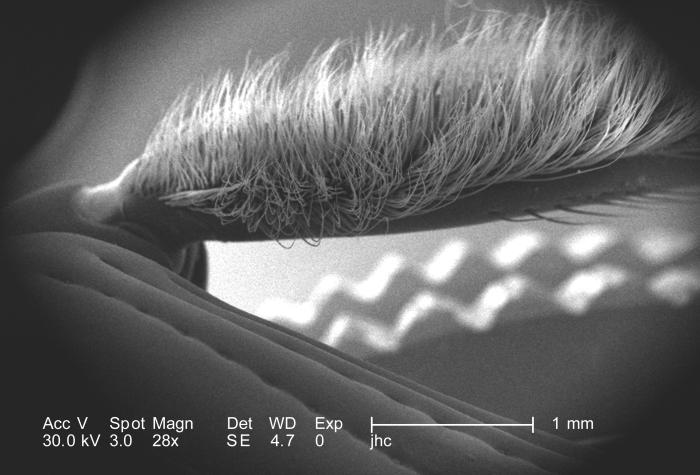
Under a magnification of only 28X, this scanning electron micrograph (SEM) depicted some of the exoskeletal morphologic characteristics displayed on the head region of an unidentified beetle found deceased in the suburbs of Decatur, Georgia. In this particular view, the proximal aspect of what is believed to be one of the insect's two maxillary palps is displayed, at a point where the palp attaches to the maxilla. The palps act both as feelers, which means that they're sensorial in nature, as well as organs of food manipulation. The beetle is able to use these palps to position its foods in the most opportune position for chewing, and grasping with its mandibles. See PHIL 10062, 10064, and 10065, for addition views of this structure.